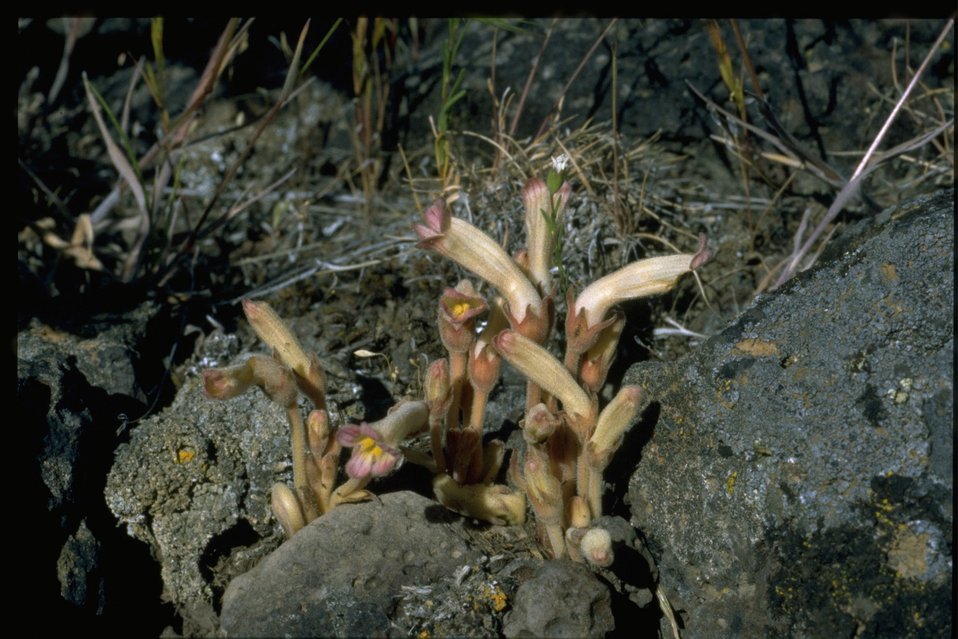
Farshot of clustered broomrape (Orobanche fasciculata).